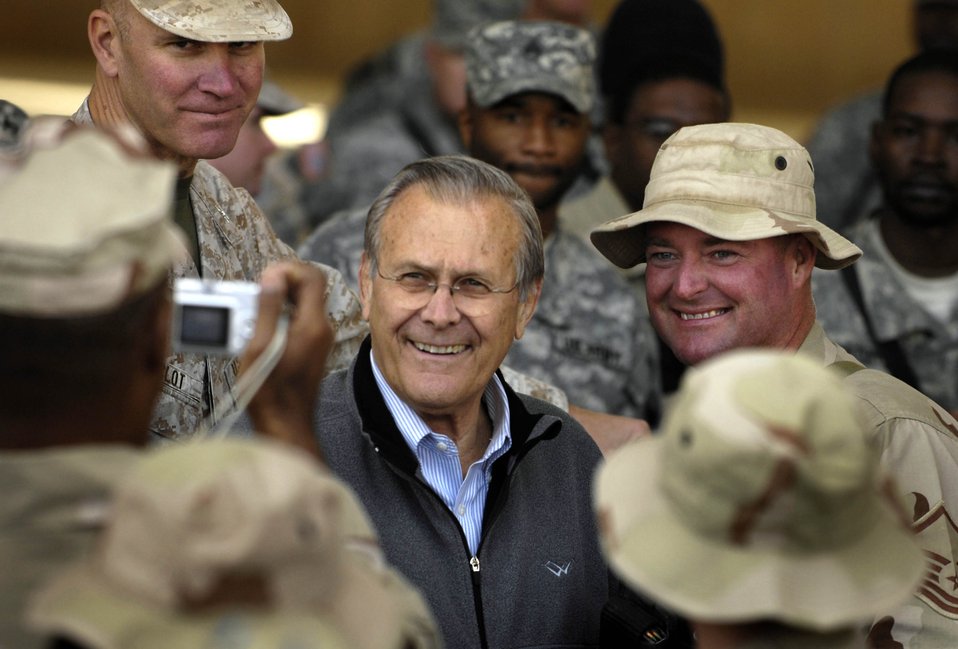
Iraqi Freedom

Secretary of Defense Donald H. Rumsfeld poses for a photo with servicemembers at a town hall meeting Dec. 9 on Al Asad Air Base, Iraq. Rumsfeld made a surprise visit to Iraq to thank the military members and their families for their sacrifice and dedication to the country.